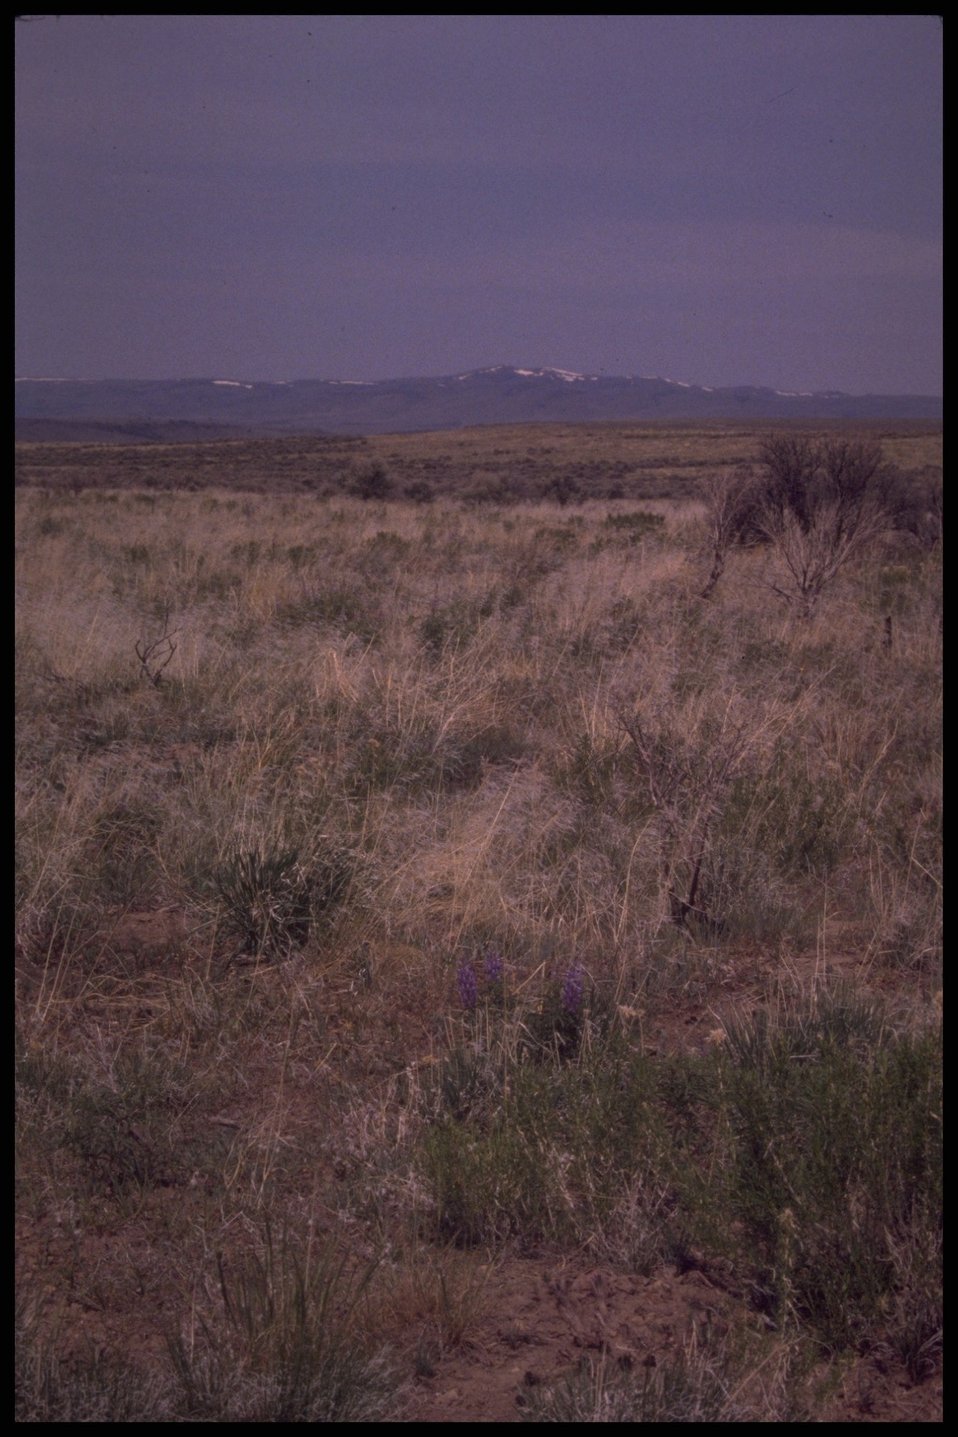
Desert prairie, Lakeview District.